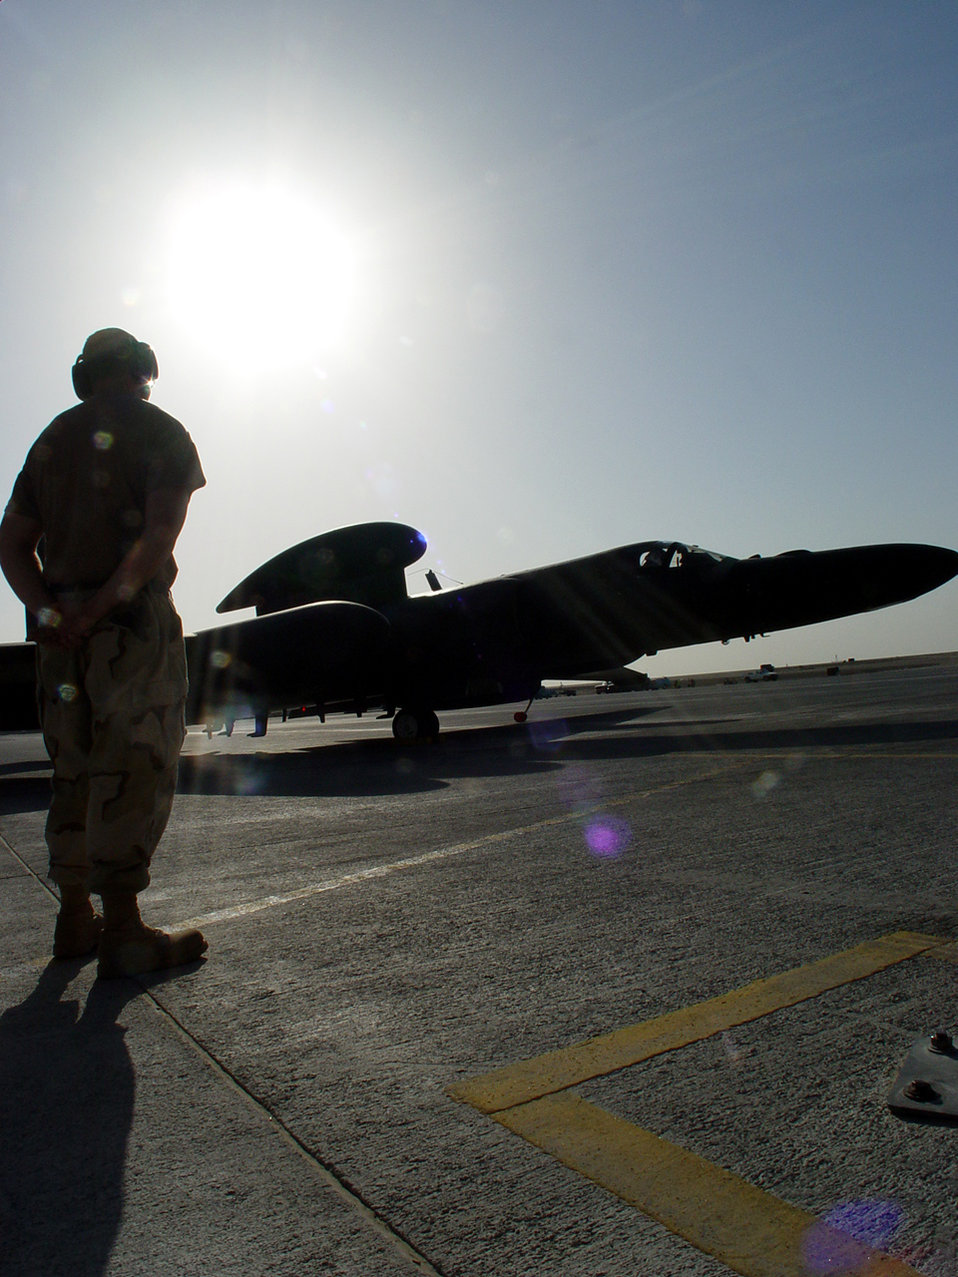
Getting hitched

SOUTHWEST ASIA -- Senior Airman Hugh Butler waits after marshaling in a U-2 Dragon Lady returning from a flight supporting Operation Enduring Freedom on Feb. 5. The U-2 is a high-altitude, multi-intelligence reconnaissance aircraft that can fly above 70,000 feet. The jet provides near-real-time imagery and signals intelligence to warfighters and national authorities. Airman Butler is a crew chief with the 380th Expeditionary Aircraft Maintenance Squadron and is deployed from Beale Air Force Base, Calif.